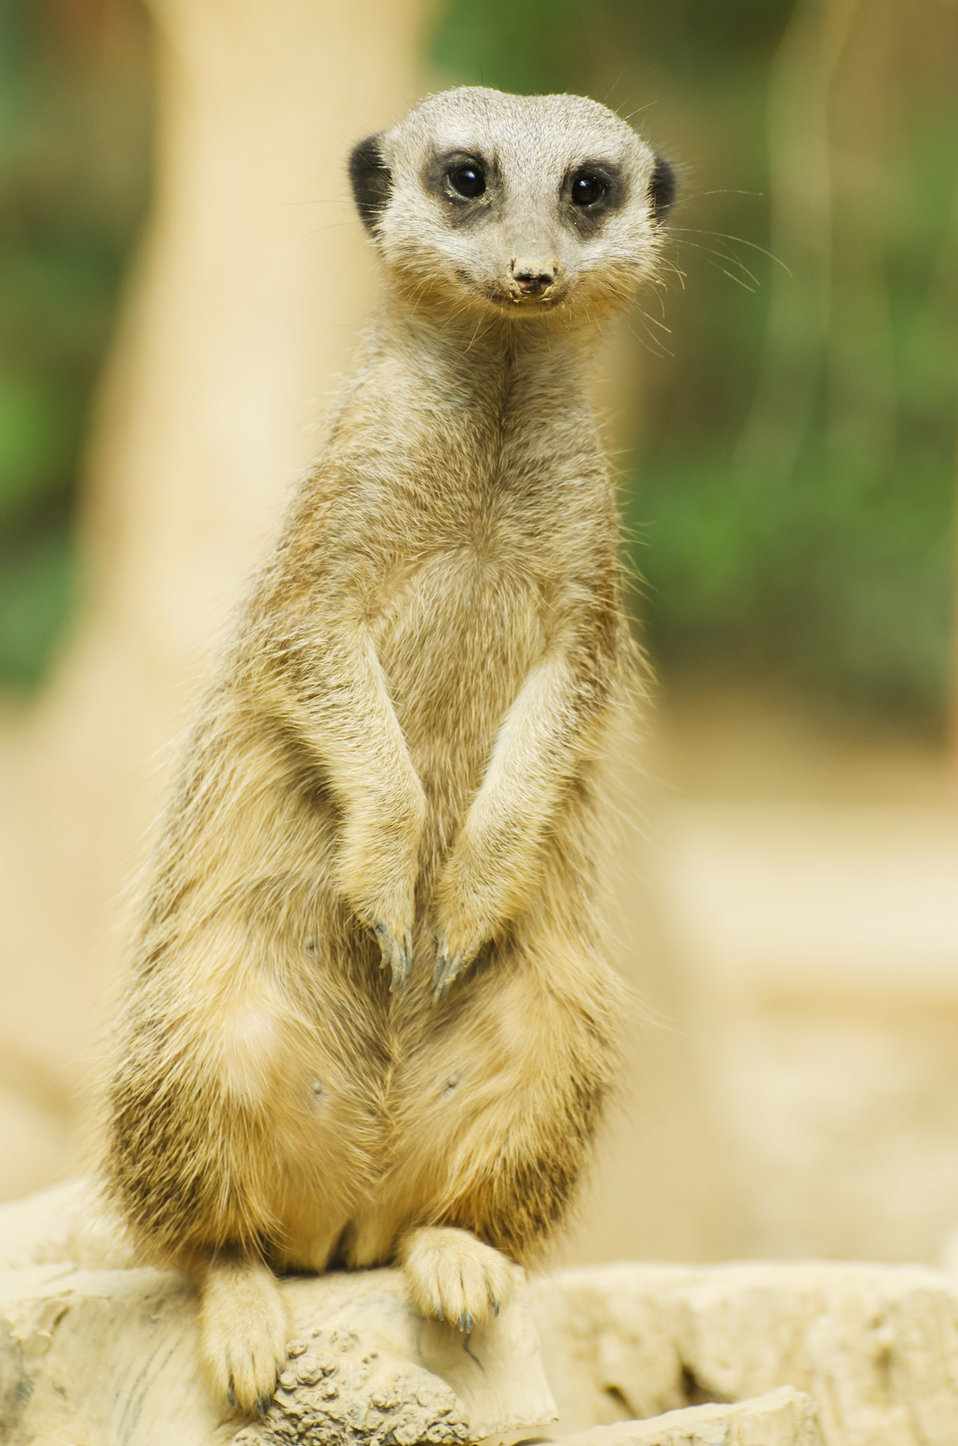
Suricate or meerkat sitting - animals.